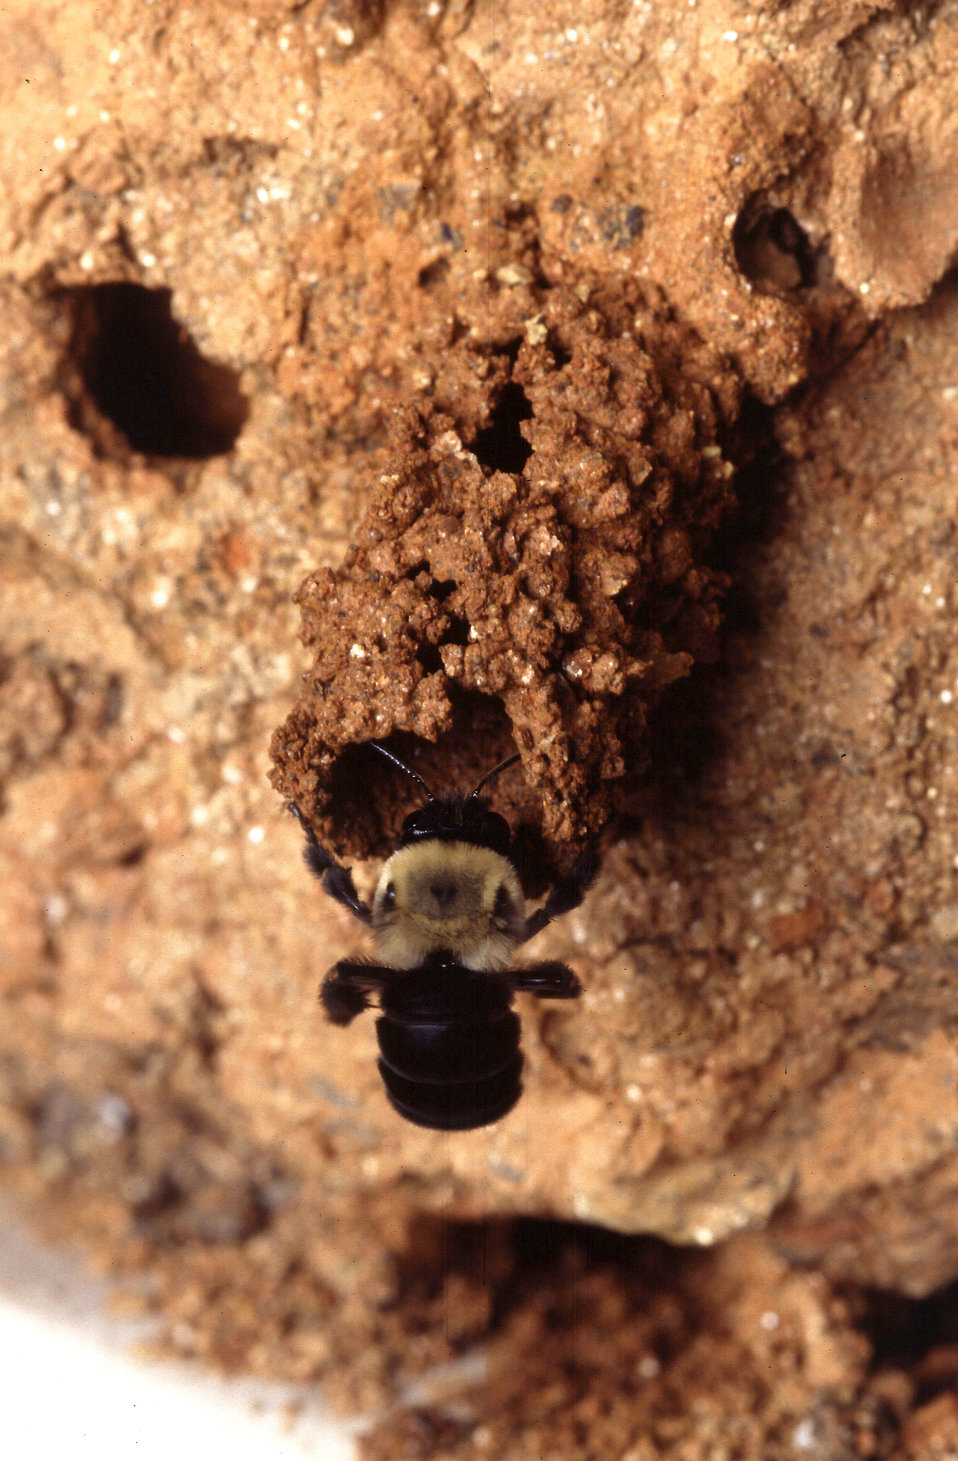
A female mustached mud bee (Anthophora abrupta) builds a chimney of mud at entrance to her nest. The mustached mud bee got its name because the males use a pheromone-soaked mustache to woo females in the spring. Mustached mud bees are native to America and live in dry clay walls and cliffs, not in hives. The adults fly during early summer and the rest of the year, they live inside nests. They look like small, fast-flying bumble bees. U.S. Department of Agriculture (USDA) Agricultural Research Service (ARS) scientists are trying to introduce these bees into cranberry bogs as pollinators for this valuable crop.